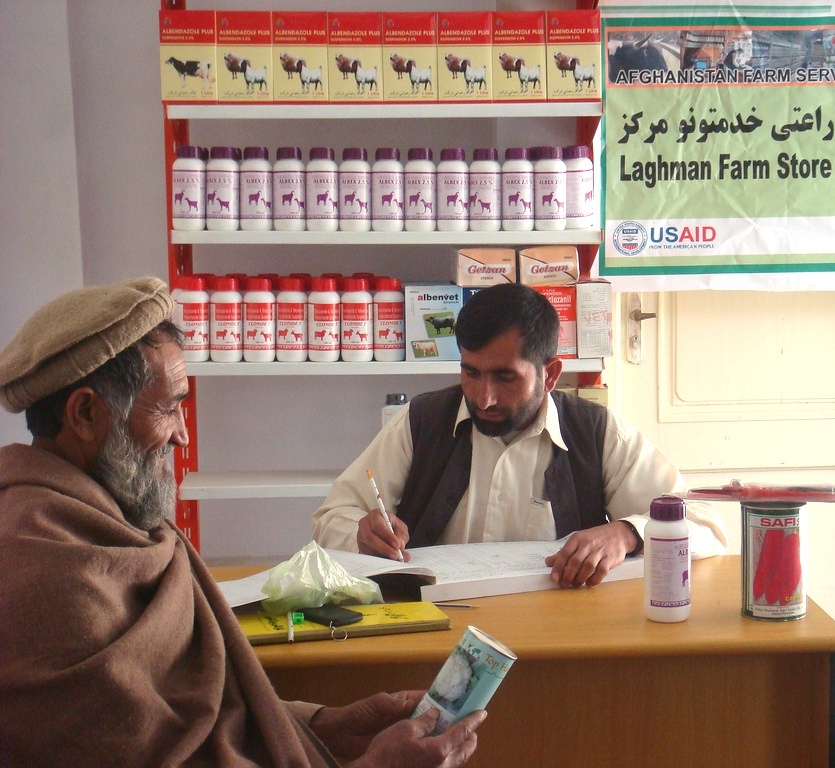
Laghman AgDepot crop